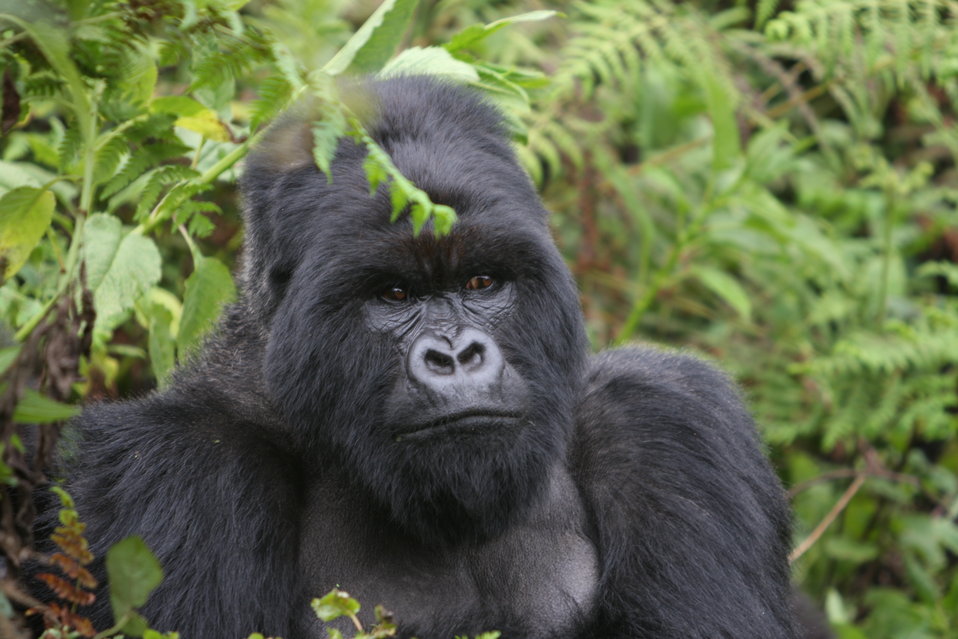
Mountain gorilla